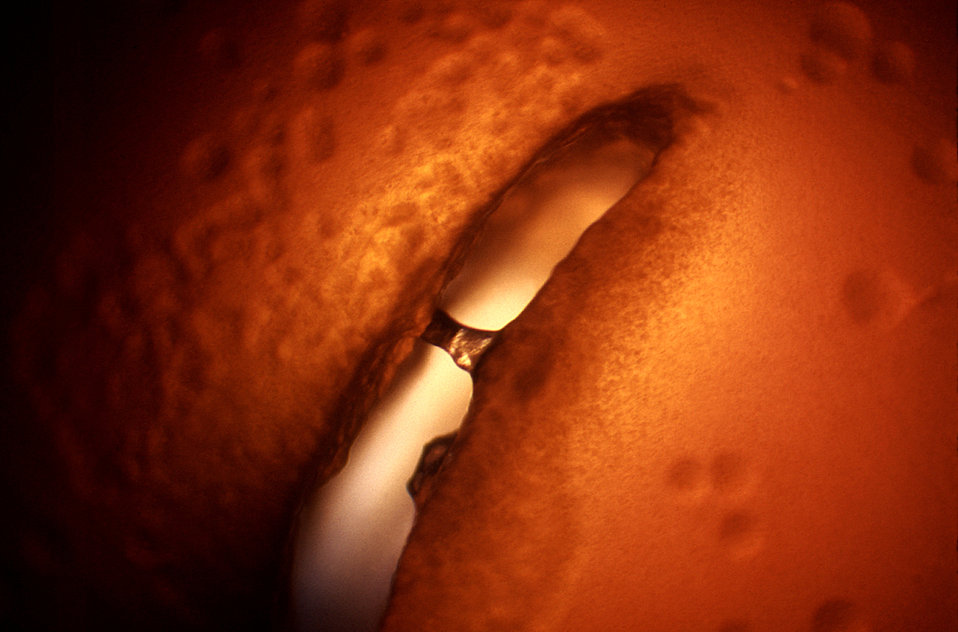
Magnified 100x, this 1977 photograph depicted a Petri dish filled with heart infusion agar medium containing 5% defibrinated rabbit blood, i.e., blood agar plate (BAP). After having been inoculated, using the "stab" technique using a culture of Streptococcus anginosus bacteria, of the Gram-positive viridans group of streptococci (VGS), the BAP was incubated in a carbon dioxide enriched atmosphere at 35oC for 24 hours. The culture grew bacterial colonies around the stab site, surrounded by what is known as "wide zone alpha hemolytic" (WZα) color changes. Characteristics of WZα reactivity are described as, "the area immediately adjacent to the colony has some red blood cells (RBCs), but an area outside of that may be completely, or nearly completely, cleared of RBCs. Therefore, there are no reactive zones where "complete" RBC hemolysis has occurred, as in the case in beta-hemolytic reactions, hence the Wide Zone "alpha" terminology.